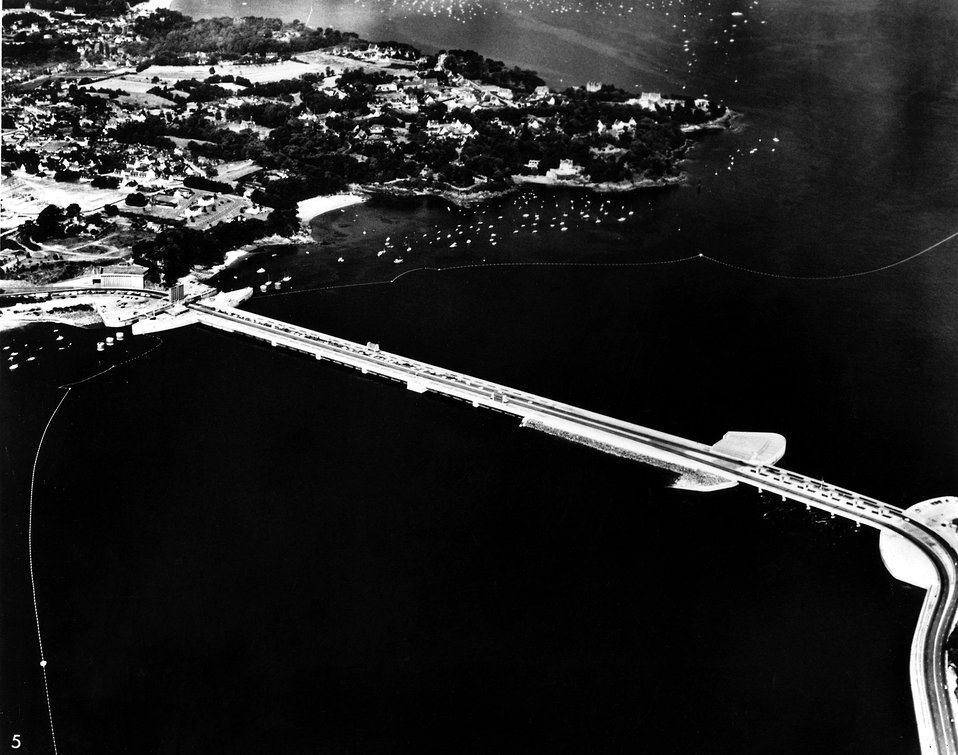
The tide which rushes up the Rance estuary on the northern coast of Brittany is one of the highest in the wold, reaching 13 and a half meters. c. 1978